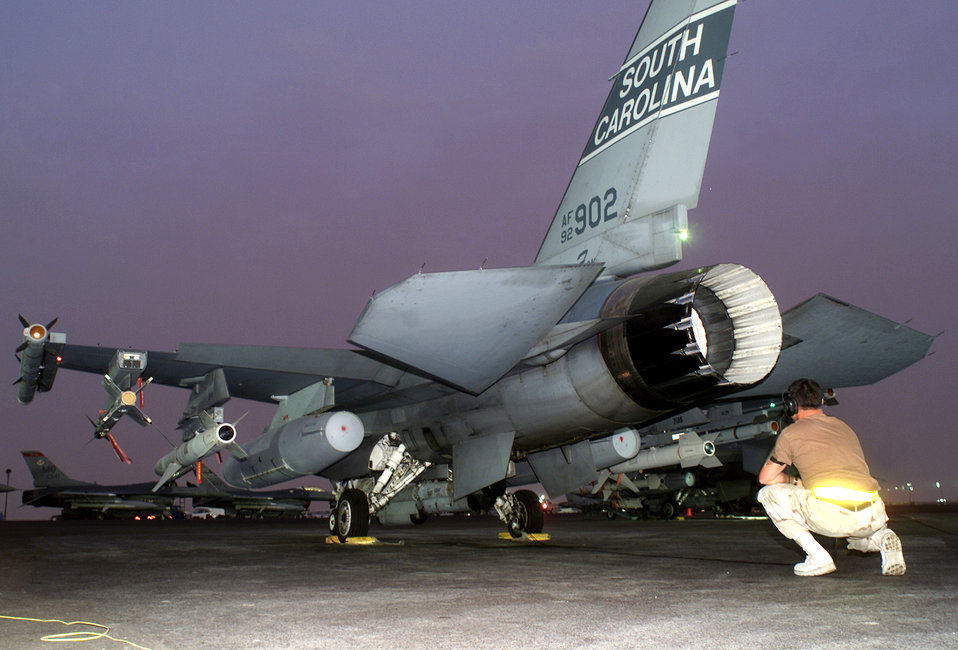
Gilbert

OPERATION IRAQI FREEDOM -- Tech. Sgt Daniel Gilbert, an F-16 Fighting Falcon crew chief, checks the underside of an F-16 launching at a forward deployed air base.